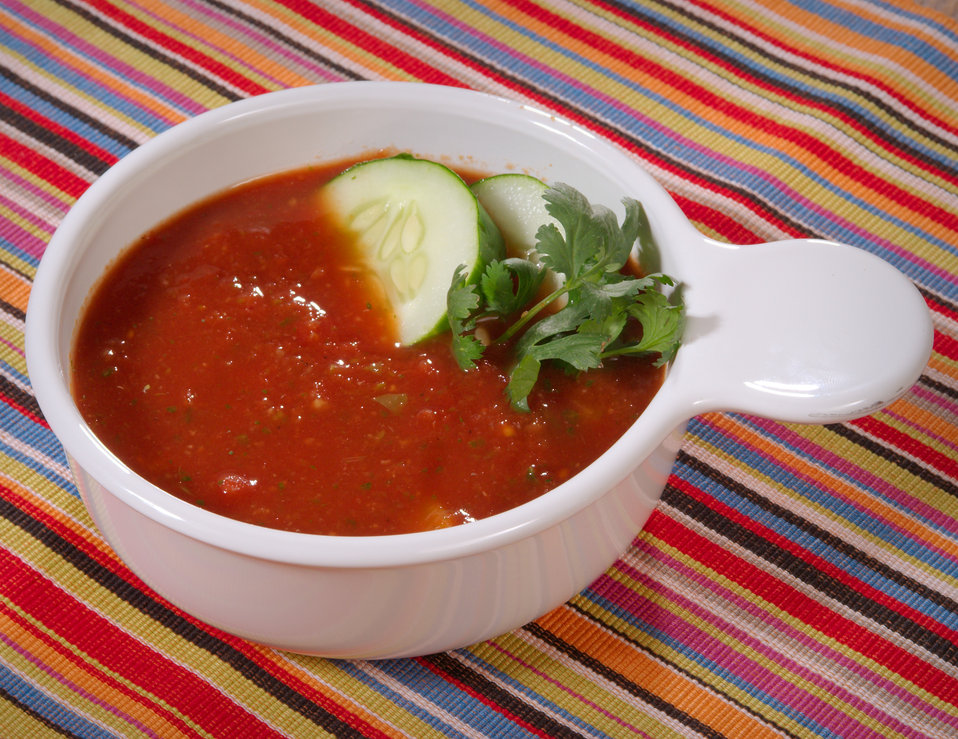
This Bean Gazpacho soup is packed with nutrients, including 15 grams of fiber, vitamins A and C, 14 grams of protein, and is low-fat and low-sodium too! The recipe, which may be accessed using the link below, calls for pinto beans, tomatoes (stewed and juice), chopped cucumber, celery, onion, green pepper, garlic, avocado, and fat-free croutons.